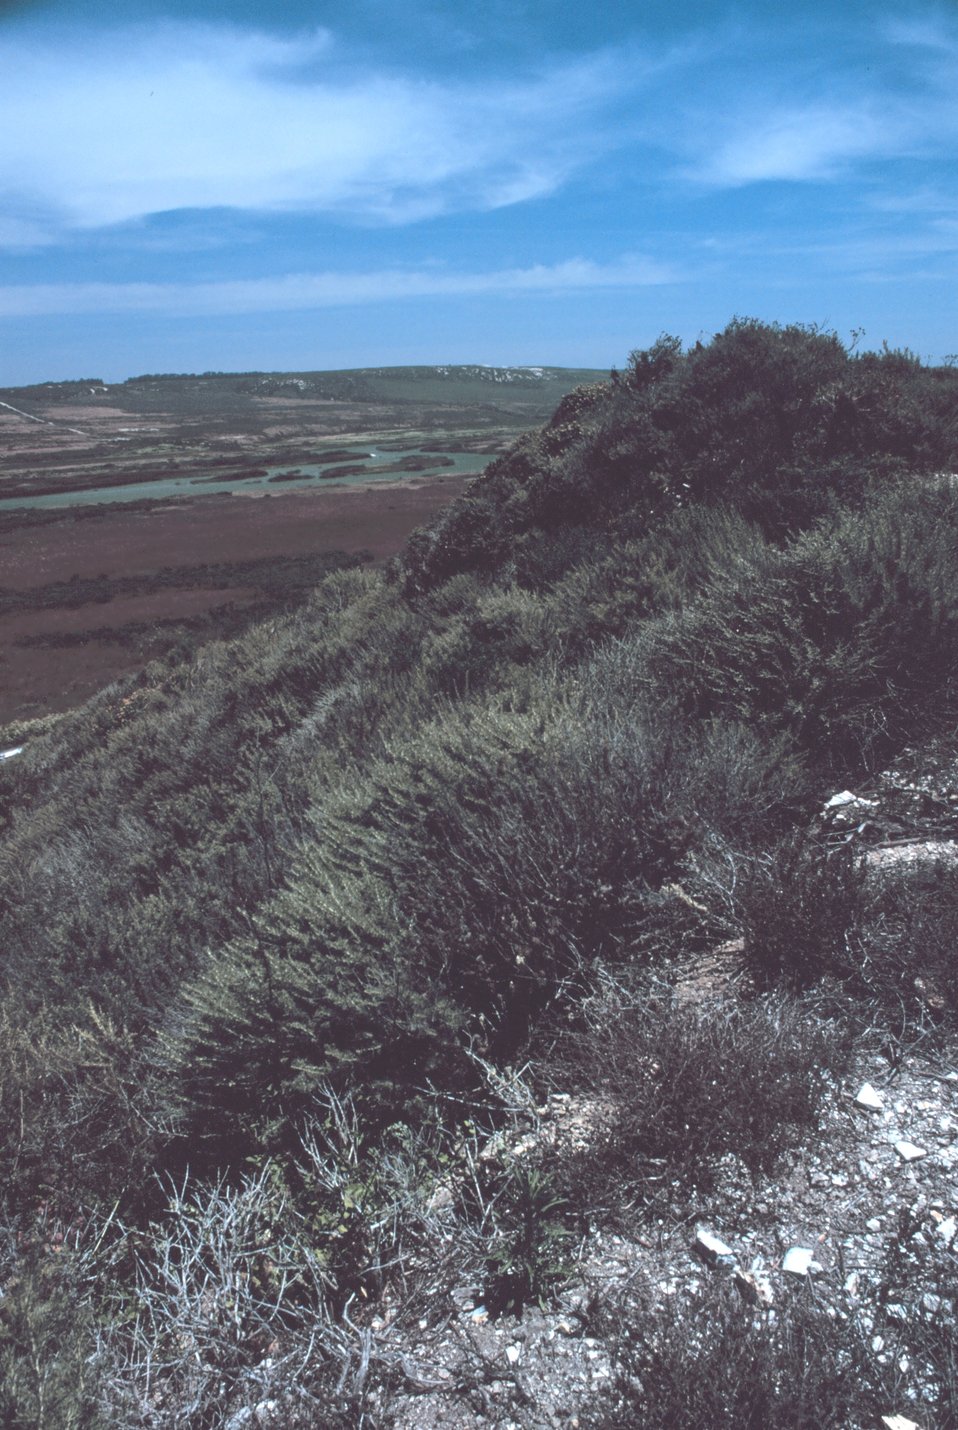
A vegetation covered dune and coastal wetlands near Vandenburg AFB